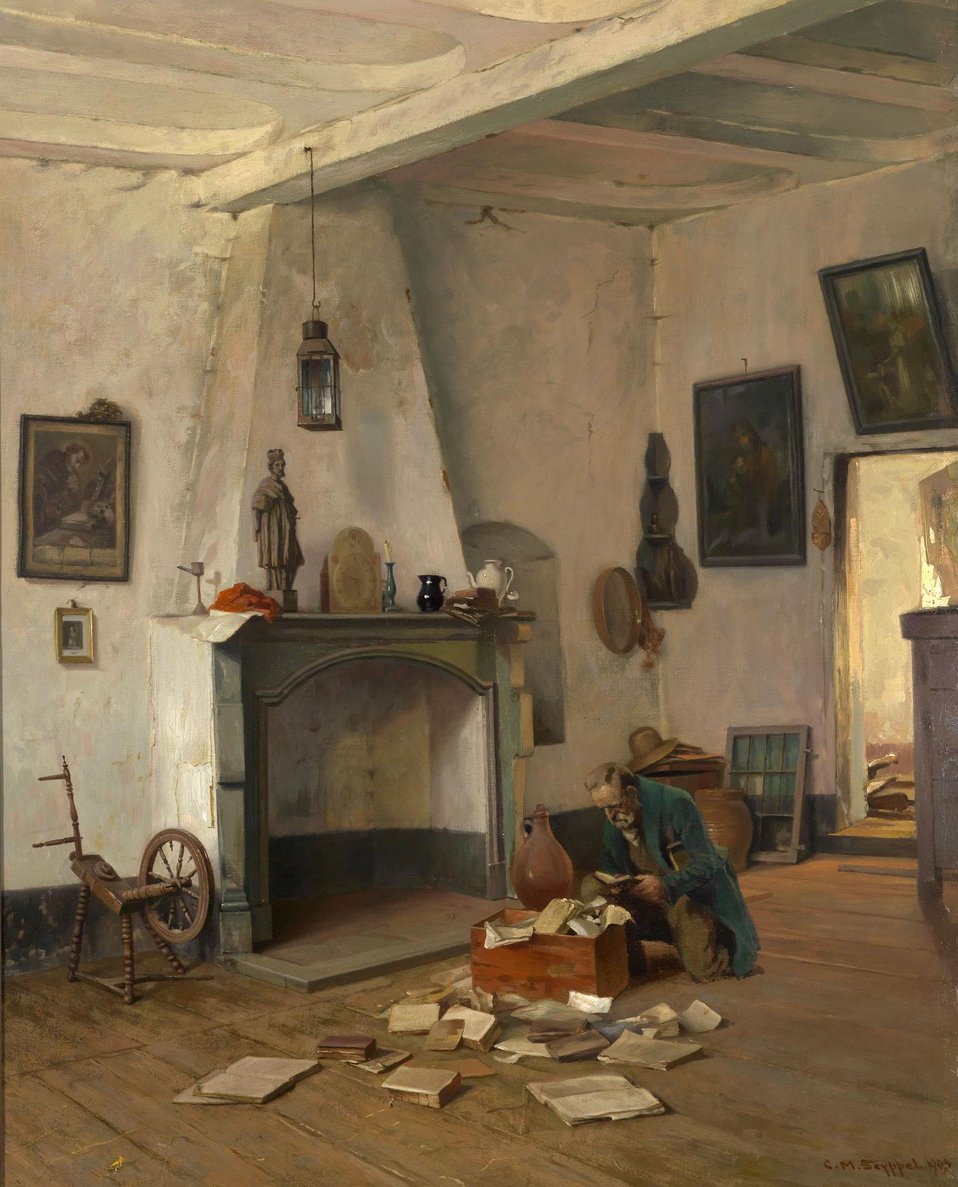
Der Bücherwurm / Verstaubte Blätter. Signiert. Datiert 1904. Öl/Lwd., 98 x 78 cm